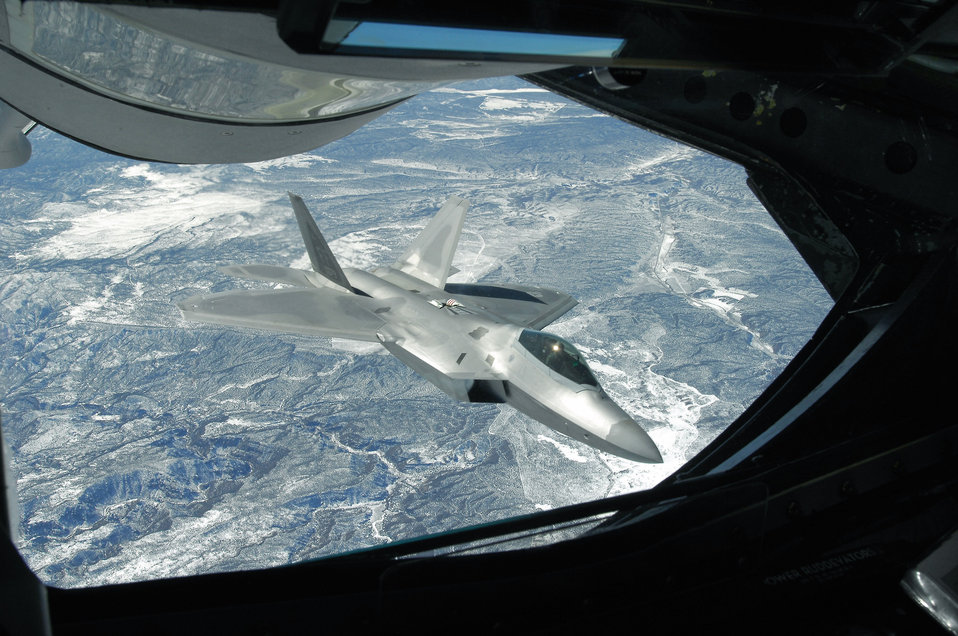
Prowling the sky

An F-22 Raptor banks away from a KC-135 Statotanker during a refueling operation as part of a joint Red Flag exercise Feb. 24 at Nellis Air Force Base, Nev. The Stratotanker is assigned to Rickenbacker Air National Guard Base in Columbus, Ohio.